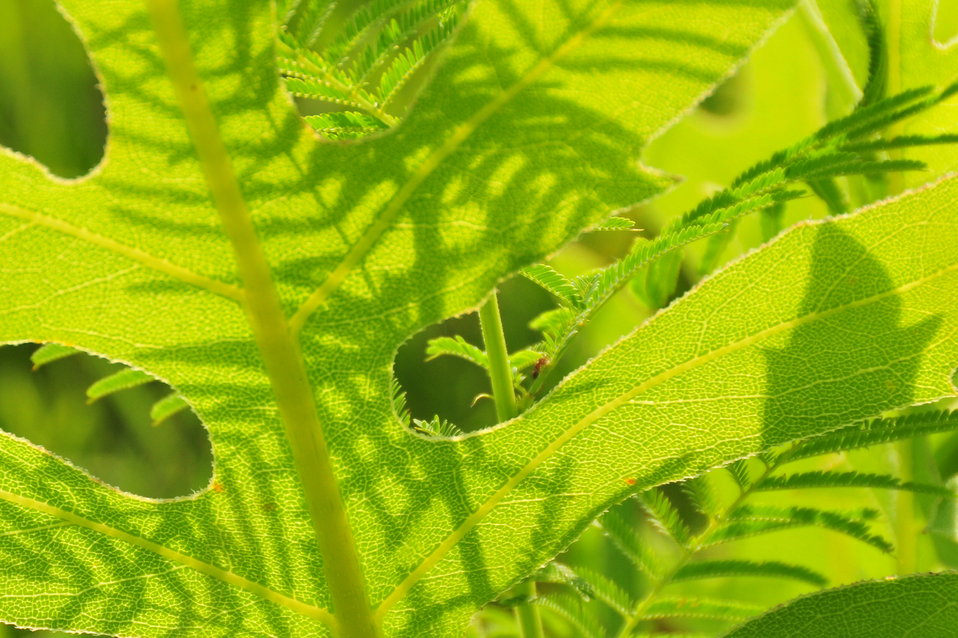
Illinois bundleflower (Desmanthus illinoensis) shadows on compassplant (Silphium lacinuatum) leaf in Flint Hills of Kansas

Illinois bundleflower (Desmanthus illinoensis) casts a shadow on compassplant (Silphium lacinuatum) leaf in Flint Hills of Kansas. Both of these species can be found in portions of the tall and mixed grass prairies. The tap root of compass plant descends
up to 16 feet into the prairie soil. The large basal leaves can be 15 to 24 inches long and are deeply cut like a giant pin oak leaf. The rigid, sand paper like leaves orient themselves in a north to south direction to avoid the direct rays of the midday sun, thus leading to the plants common name of compass plant.